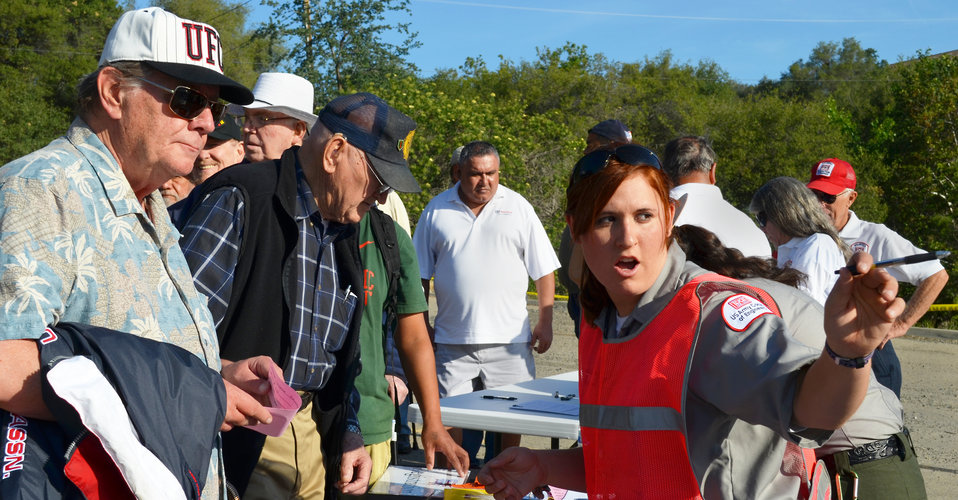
Take a Warrior Fishing 2014 at Pine Flat Lake

Rachel Matthews (right), a member of the maintenance crew at Pine Flat Lake, directs a fisherman to his host boat captain. Pine Flat Lake, the U.S. Army Corps of Engineers Sacramento District park near Piedra, Calif., hosted Take a Warrior Fishing on May 3, 2014. The recreational event sponsored by Central Valley Veterans and their corporate donors, plus bright sunshine and good fishing, attracted 68 veterans and their families. A team of over 100 volunteers made sure veterans and their families enjoyed a day of fishing, fun and food.